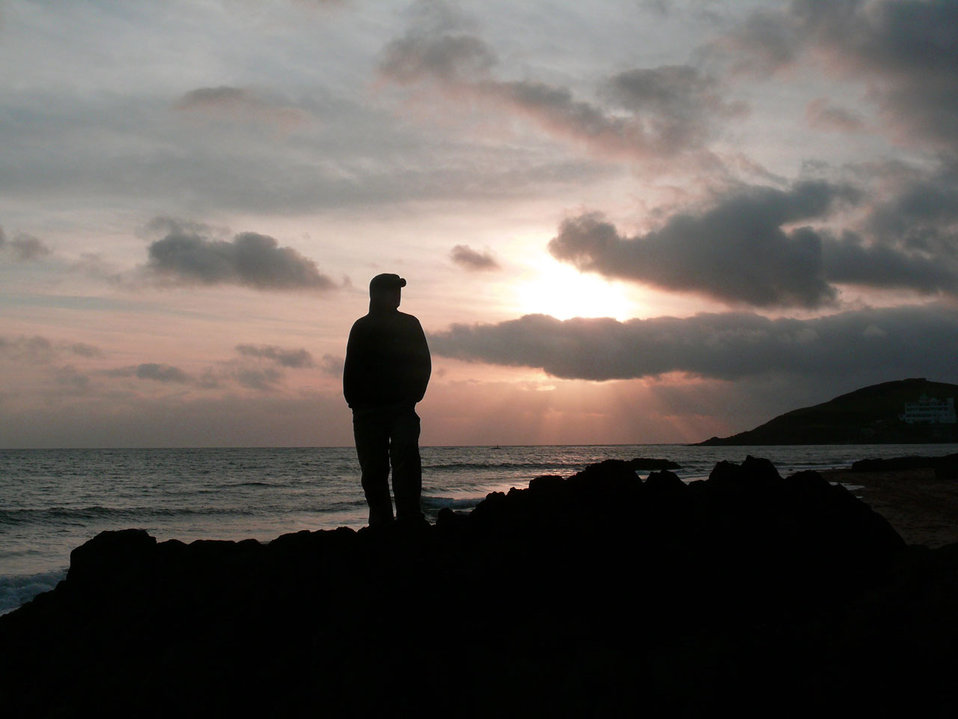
Sunset sky.